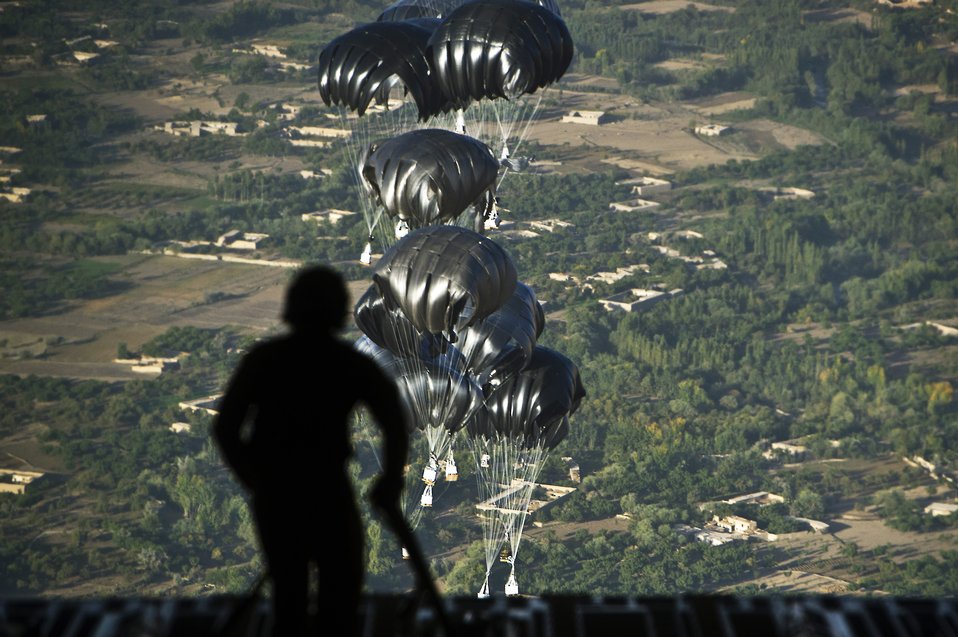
Aid away

Staff Sgt. Peter Jensen collects straps that restrained airdrop bundles in the back of a C-17 Globemaster III on Sept 30, 2011. Jensen and the crew of the C-17 air dropped 40 bundles to a remote outpost in Afghanistan. Jensen is a loadmaster assigned to the 816th Expeditionary Airlift Squadron.